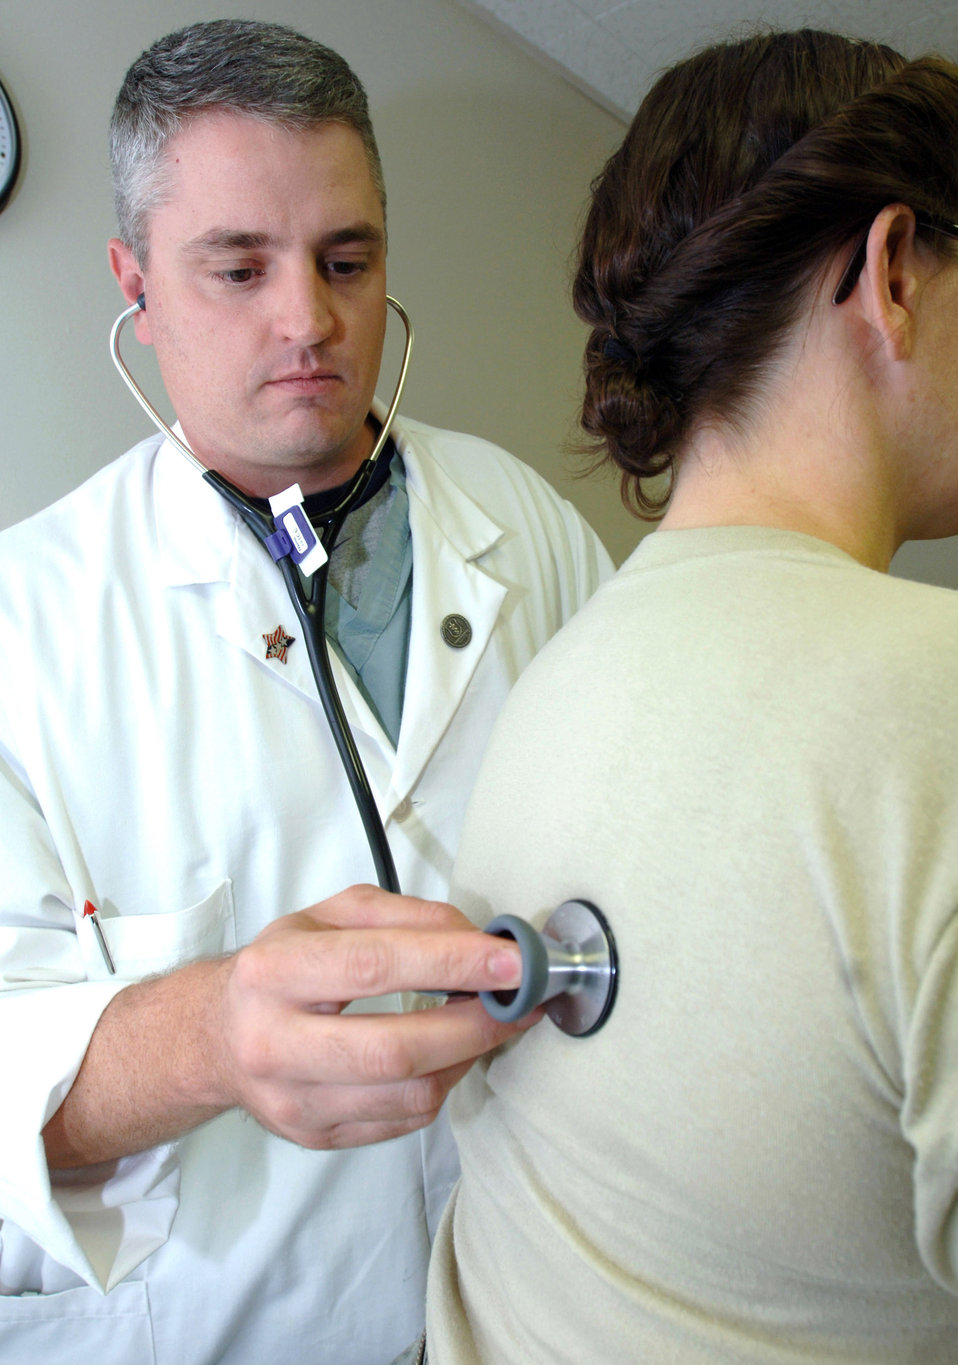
Dr. David Rice

Maj. (Dr.) David Rice, a pulmonary and critical care physician at Wilford Hall Medical Center, Lackland Air Force Base, Texas, listens to a patient's heart beat during an exam Aug. 4 in the pulmonary clinic.